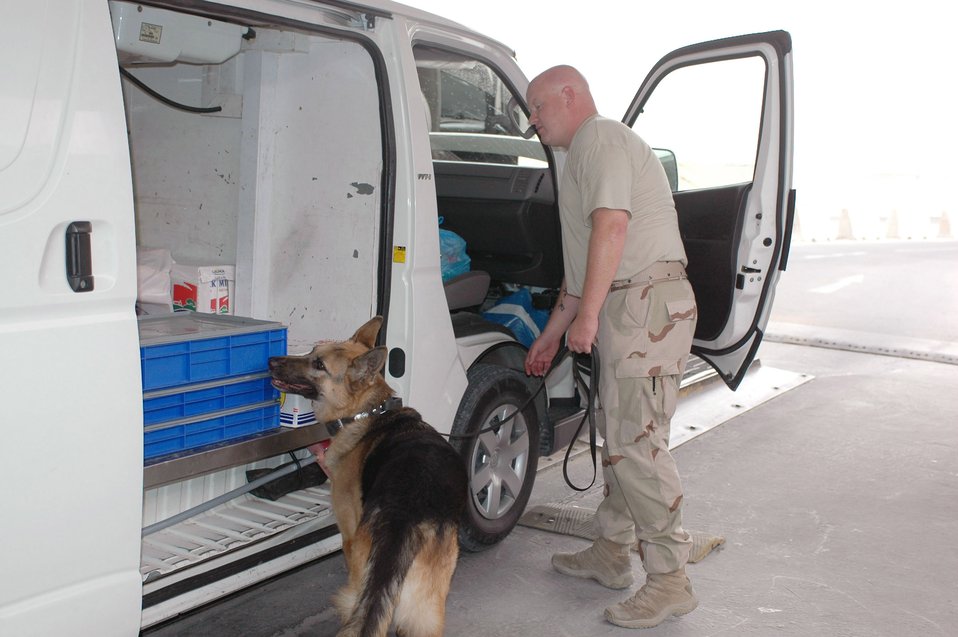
High-tech search area keep American, coaltion forces secure

Staff Sgt. Scott Yeager and his dog, Stony, inspect a vehicle at the search pit in Southwest Asia. Sergeant Yeager and Stony work together on a daily basis searching vehicles for improvised explosive devices and vehicle borne explosive devices.